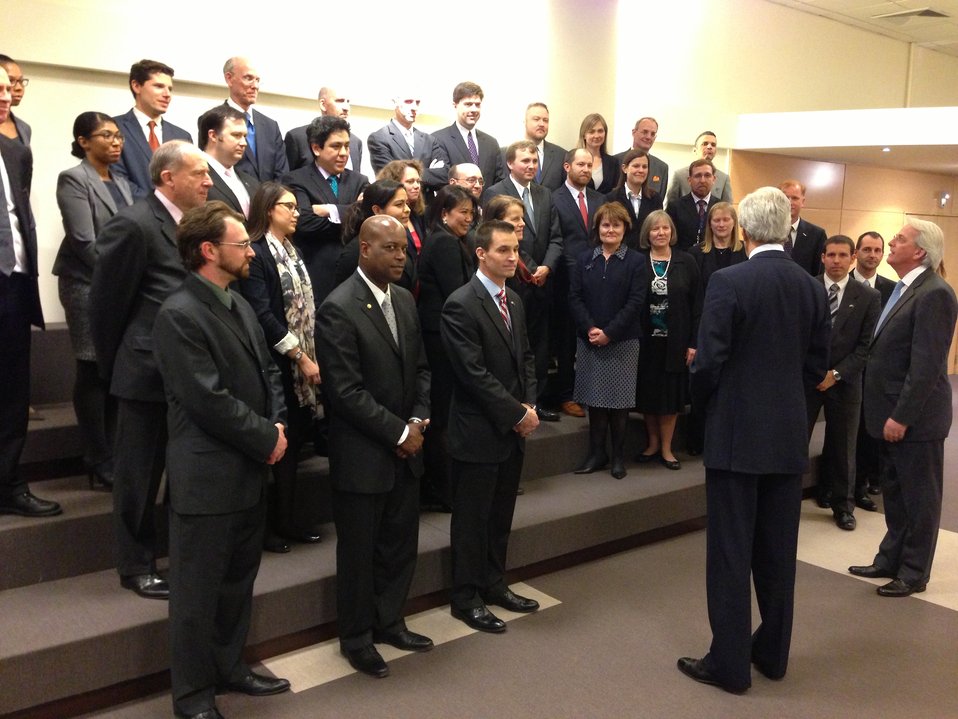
Secretary Kerry Greets Staffers From Tri-Mission Brussels

U.S Secretary of State John Kerry greets staffers from Tri-Mission Brussels after a day of meetings at NATO headquarters in Belgium, April 23, 2013.